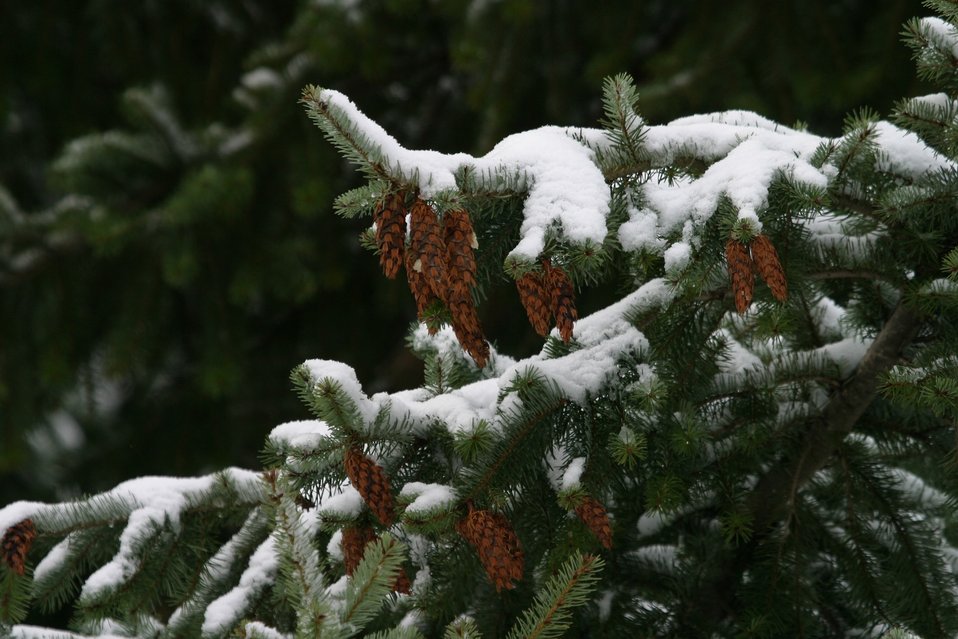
Snow and ice on Douglas Fir Bows and cones during the storm of January 2004.